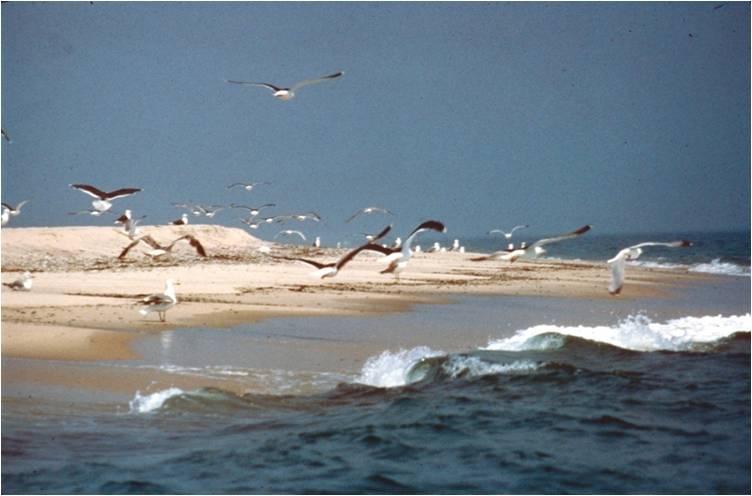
North Atlantic beach